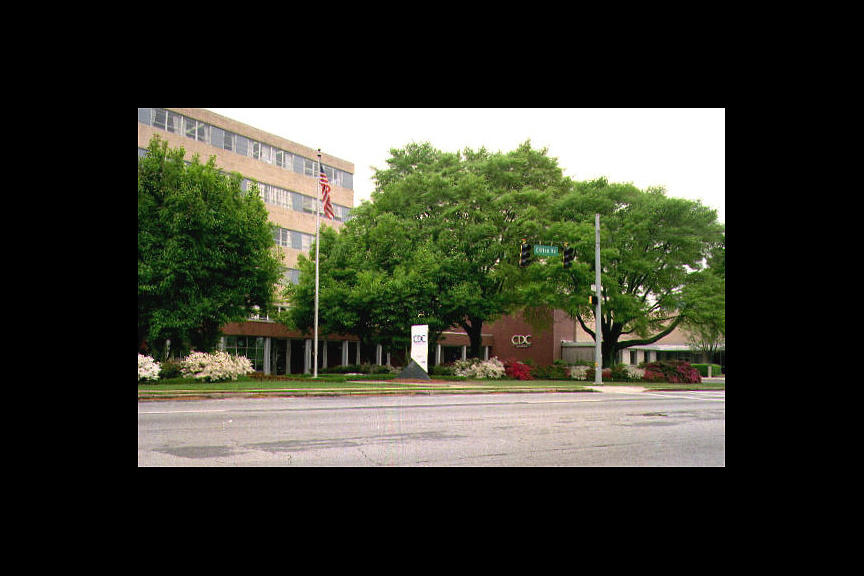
Centers for Disease Control (CDC) sign and Buildings 1 and 2.